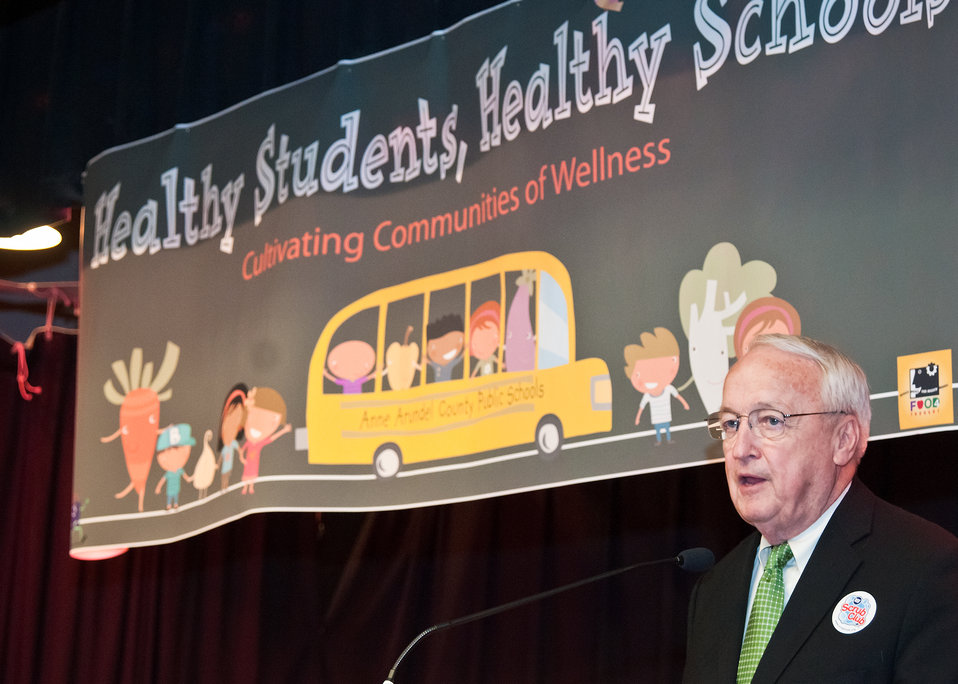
Dr. Kevin Concannon, Undersecretary, Food Consumer and Nutrition Services explains the importance of good nutrition and exercise to students at Maryland City Elementary School in Laurel, MD, during a United States Department of Agriculture, Food Safety Inspection Service, Food Safety Education Camp on Thursday, May 5, 2011.